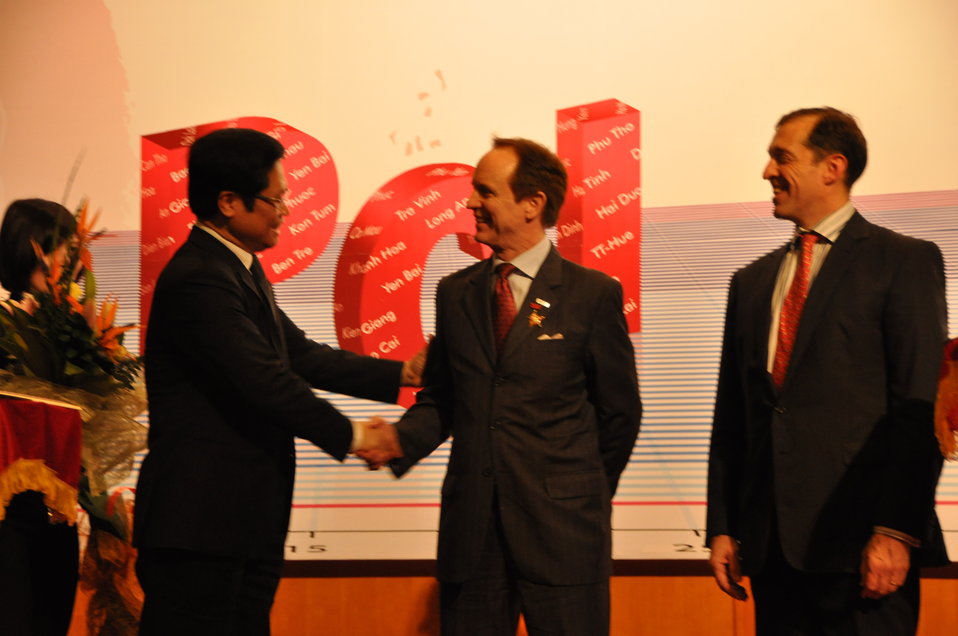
USAID Mission Director Francis Donovan receives award from VCCI Chairman Vu Tien Loc at the Provincial Competitiveness Index 2011 Launch